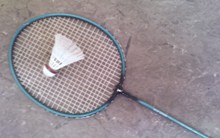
Čeština: Badmintonová pálka a míček